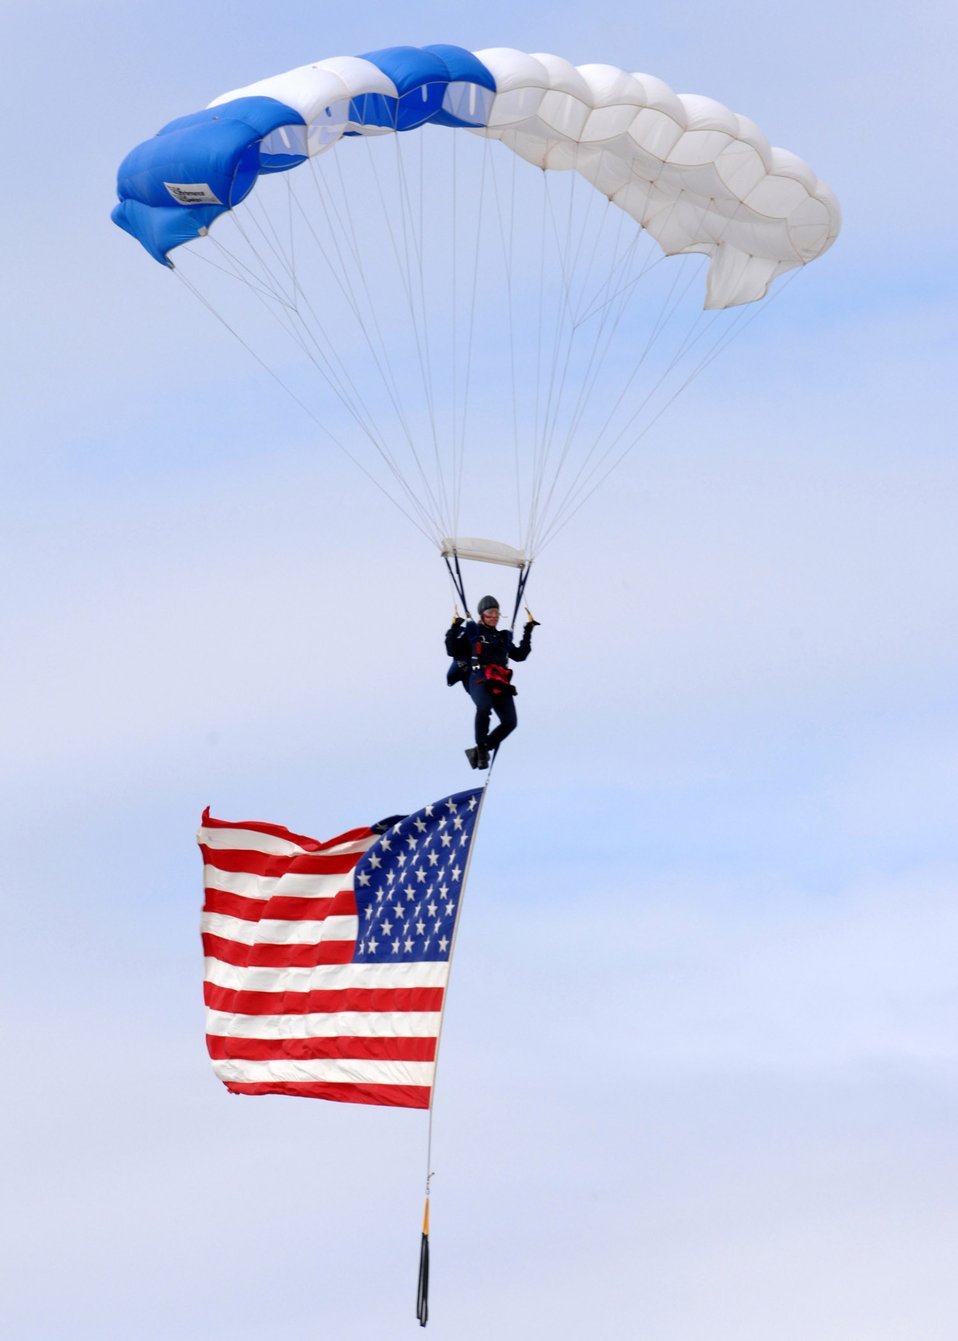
Air Force Week

Cadet 1st Class Ilea Eskildsen, U.S. Air Force Academy's Wings of Blue Parachute Demonstration Team, parachutes down to Luke Air Force Base, Ariz., with the American Flag during the